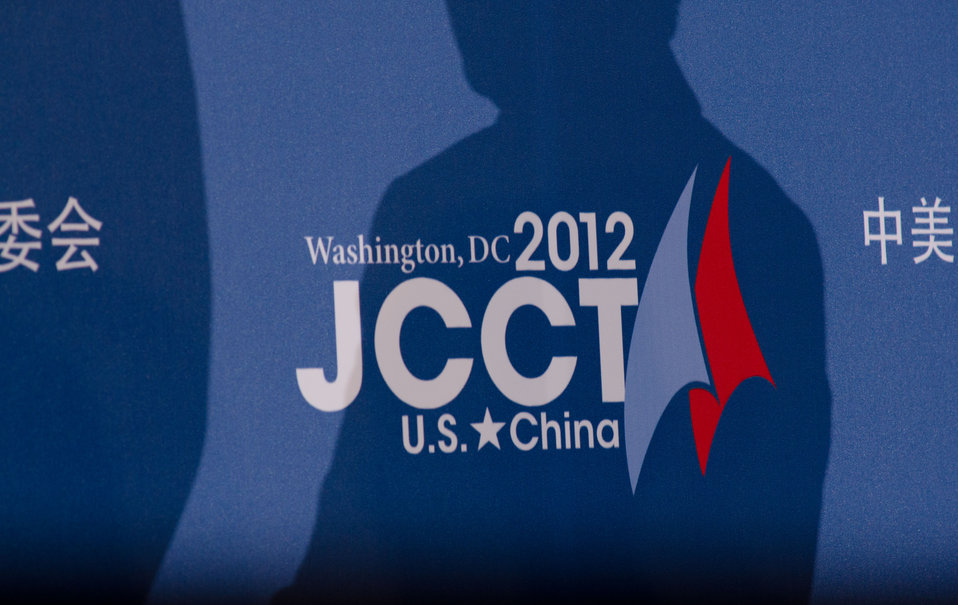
The 23rd Session of the U.S. China Joint Commission on Commerce and Trade (JCCT) logo with shadow, at the Andrew W. Mellon Auditorium in Washington, D.C. on Wednesday, Dec. 19, 2012. The JCCT holds high-level plenary meetings on an annual basis to review progress made by working groups that focus on a wide variety of trade issues. These working groups meet throughout the year to address topics such as intellectual property rights, agriculture, pharmaceuticals and medical devices, information technology, tourism, commercial law, environment, and statistics. Established in 1983, the JCCT is the main forum for addressing bilateral trade issues and promoting commercial opportunities between the United States and China. The 2011 JCCT meeting was held in Chengdu, China, where China agreed, among other issues, to improve intellectual property enforcement, delink innovation policies to government procurement preferences, and provide a fair and level playing field in China’s Strategic Emerging Industries.